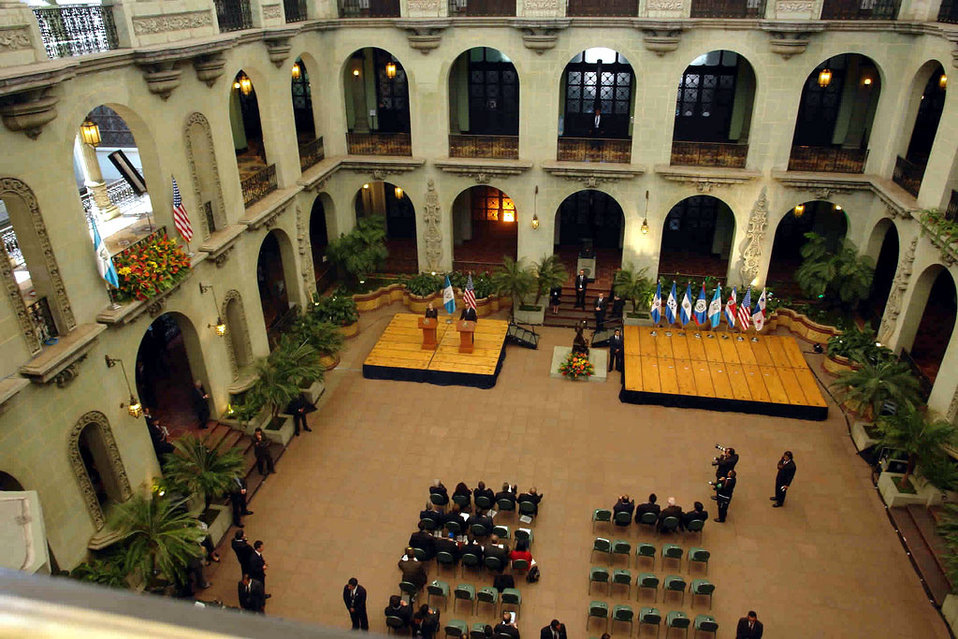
Panoramic View of Press Conference

A panoramic view of the room during U.S. Secretary of State's press conference with Guatemalan President Alvaro Colom at the National Palace of Culture, Guatemala City, Guatemala March 5, 2010.